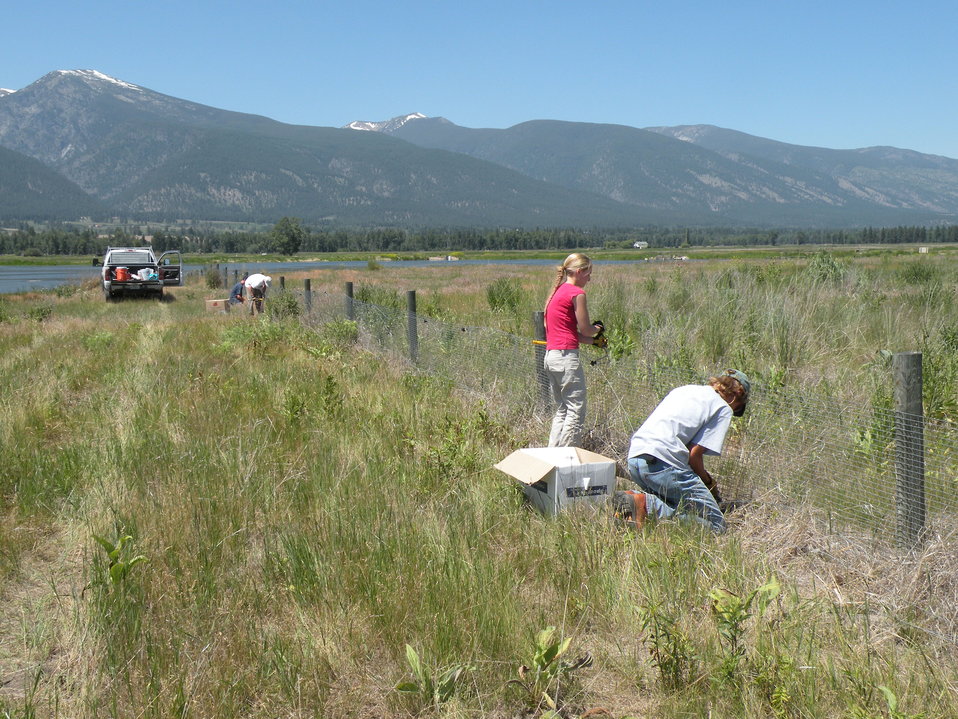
Removing Fence at Lee Metcalf National Wildife Refuge

Youth remove a predator fence from Lee Metcalf National Wildlife Refuge in Montana.